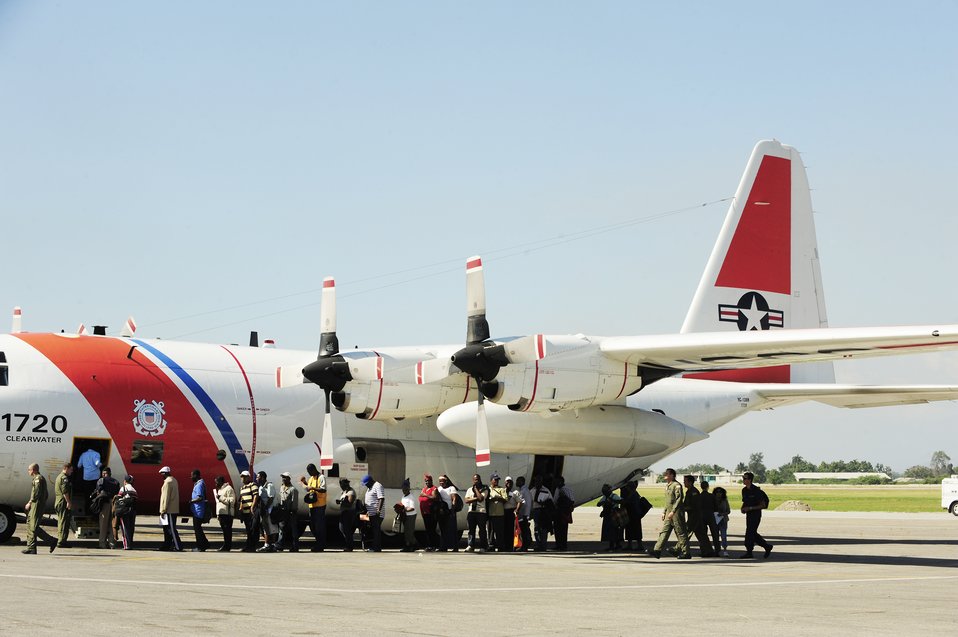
Haiti earthquake relief

U.S. citizens living in Haiti wait to board a U.S. Coast Guard C-130 Hercules at the Port-Au-Prince airport for transport back to the U.S. Jan. 15, 2010. Department of Defense assets have been dispatched to Haiti to assist with humanitarian assistance and disaster relief after a magnitude 7 earthquake hit the country Jan. 12, 2010.